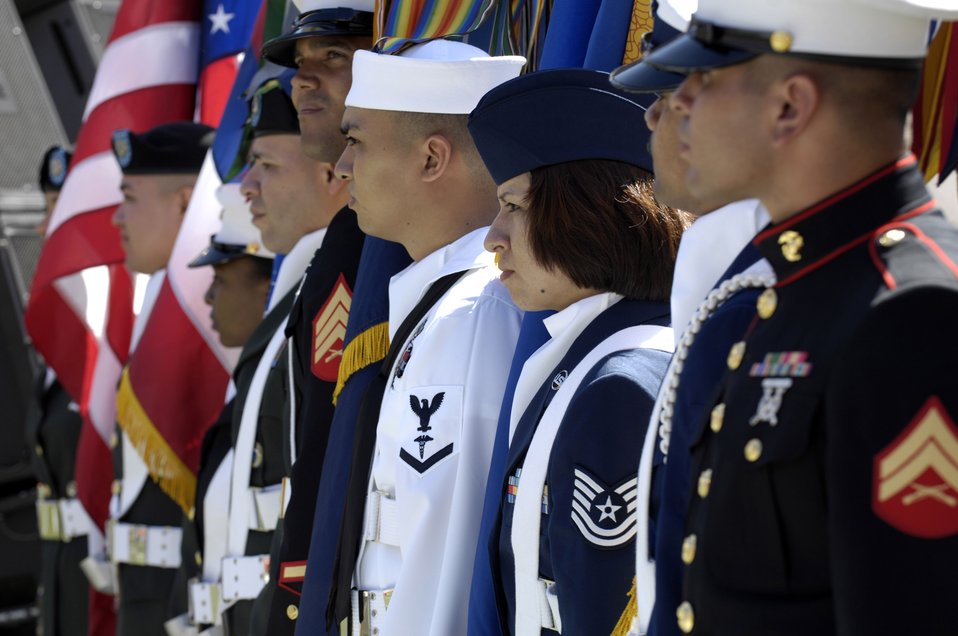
Pro Bowl Airmen

A joint-service honor guard waits to take the field during the opening ceremonies of the 2007 Pro Bowl Feb. 10 at Aloha Stadium in Hawaii. Servicemembers from all branches of the U.S. military in Hawaii participated in Pro Bowl activities. The Pro Bowl brings together the top players in the National Football League.